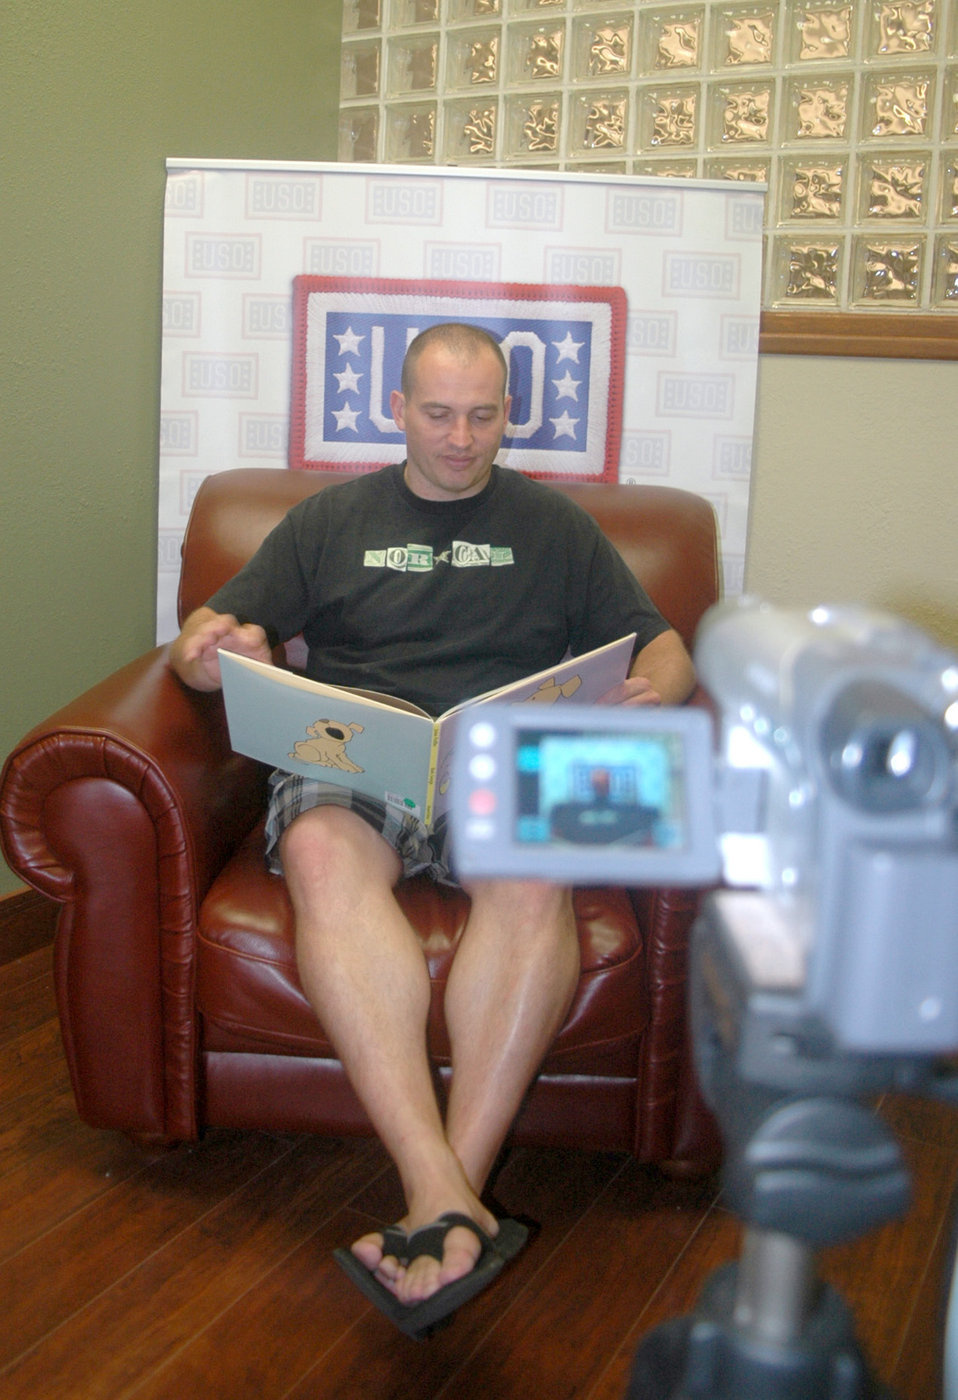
Once upon a time

Tech. Sgt. David Aceveda reads a children's book in front of a video camera Sept. 24, 2010, inside the USO Community Center on Dover AFB, Del., as part of the United Through Reading program. While Sergeant Aceveda is deployed, the pre-recorded DVD and book will be sent to his children. Sergeant Aceveda is a member of the 744th Communications Squadron at Joint Base Andrews Naval Air Facility, Md.